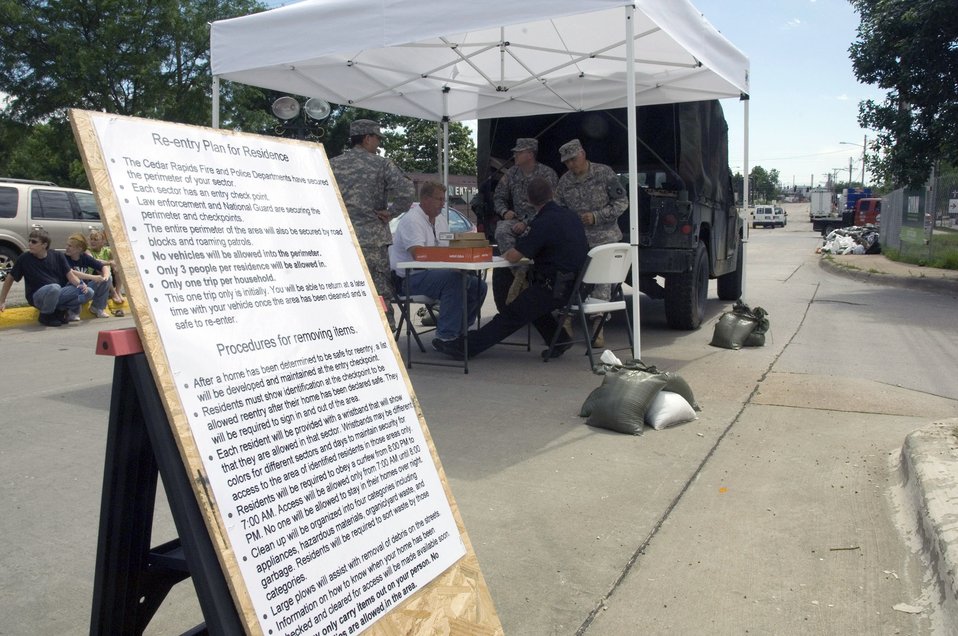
Air National Guard shores up as flood recedes

Checkpoints have been set up throughout the flood-damaged areas of Cedar Rapids, Iowa. Once their homes have been inspected and identified as non-hazardous, residents are allowed in on a limited basis to recover personal items and valuables.